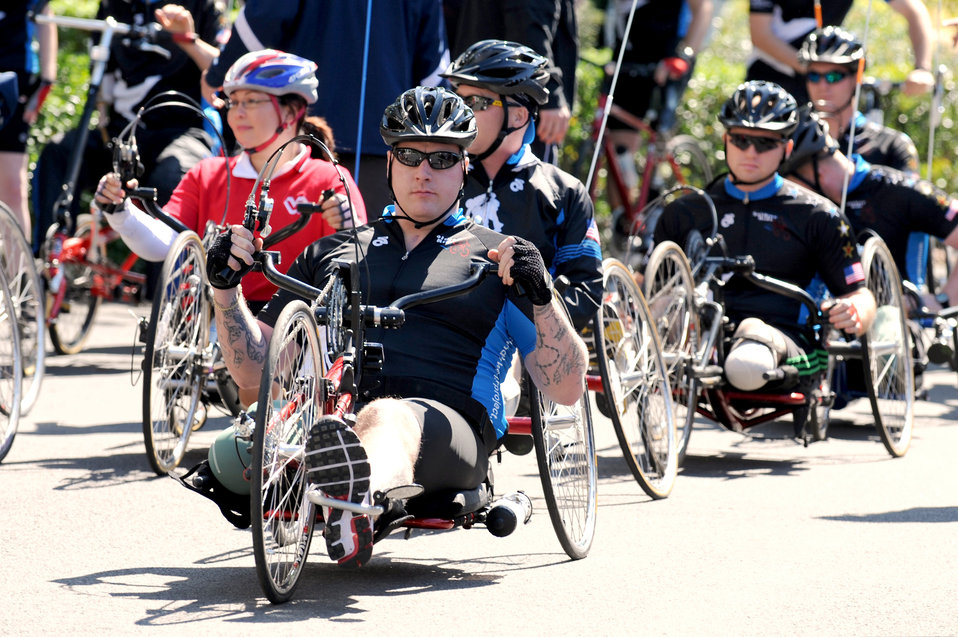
Servicemembers send wounded cyclists off at White House

Wounded Warriors participate in the White House to the Lighthouse Challenge, the fourth such trek hosted by the Wounded Warrior Project April 27, 2010, in Washington D.C.